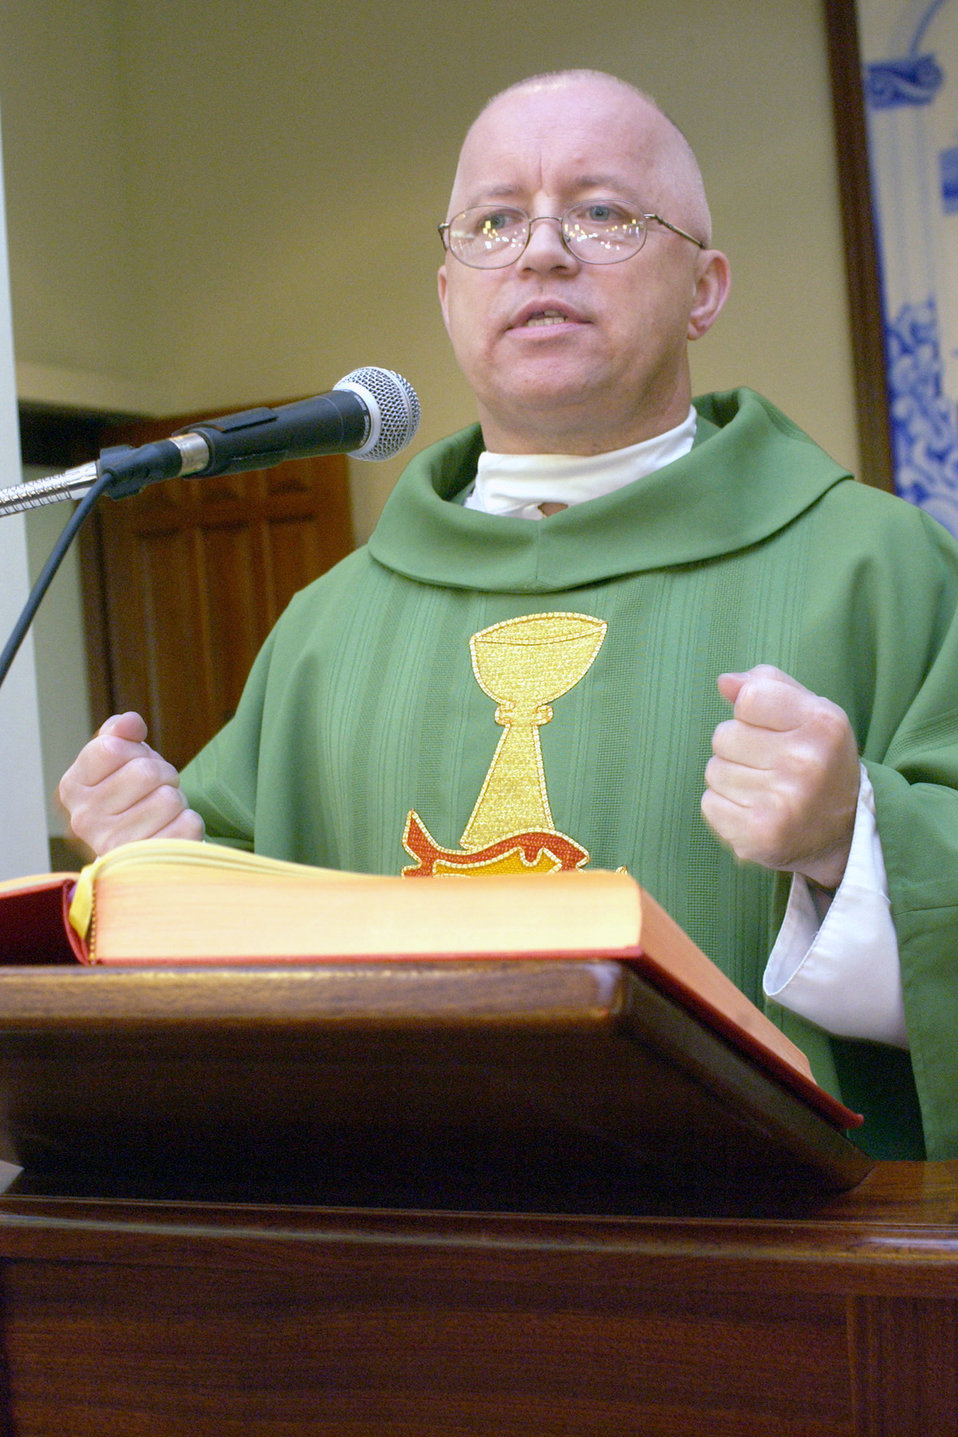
Celebrating Mass

LAJES FIELD, Azores -- Chaplain (Maj.) Stan Pieczara celebrates Mass at the chapel here. Pieczara joined the Air Force in 1992, after receiving his U.S. citizenship. He is a 65th Air Base Wing chaplain.